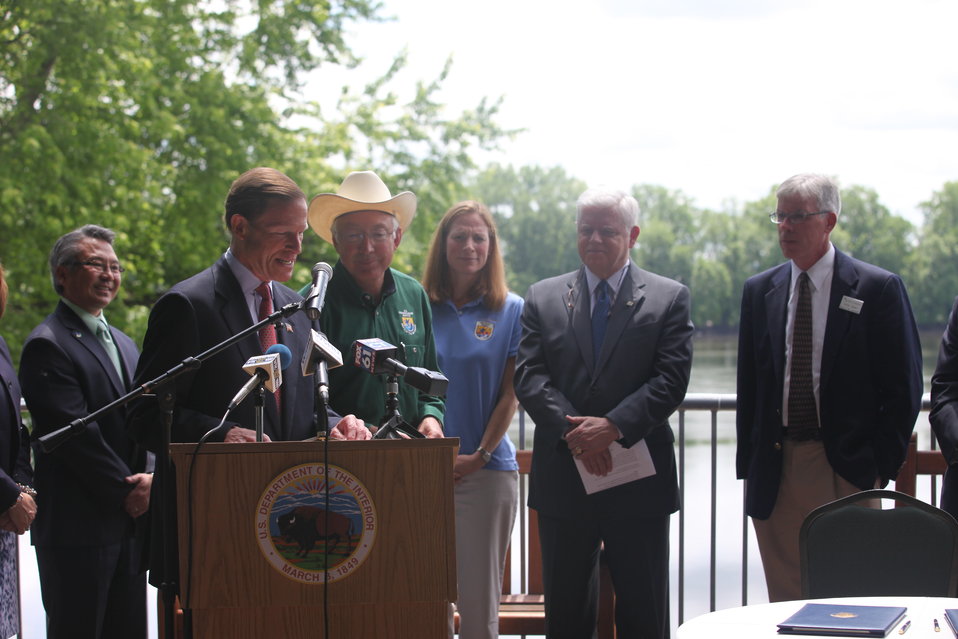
Sen. Blumenthal & Salazar

Senator Blumenthal (CT) speaks and shows his support for the Connecticut River Blueway designation.